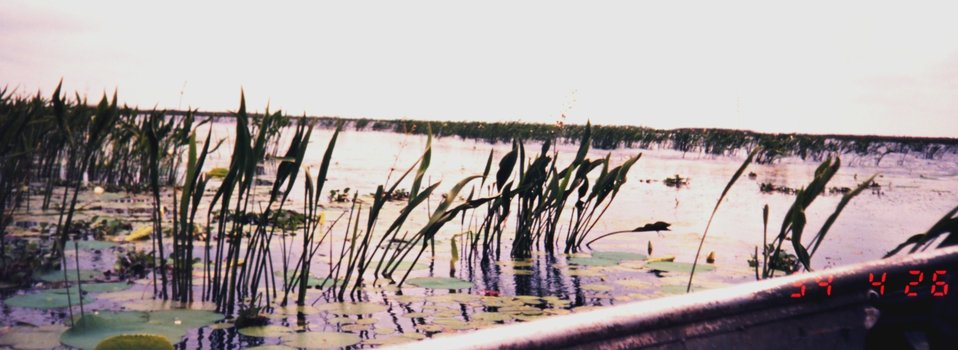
Freshwater vegetation on the Chenier Plain not far from Sabine River and Texas border.